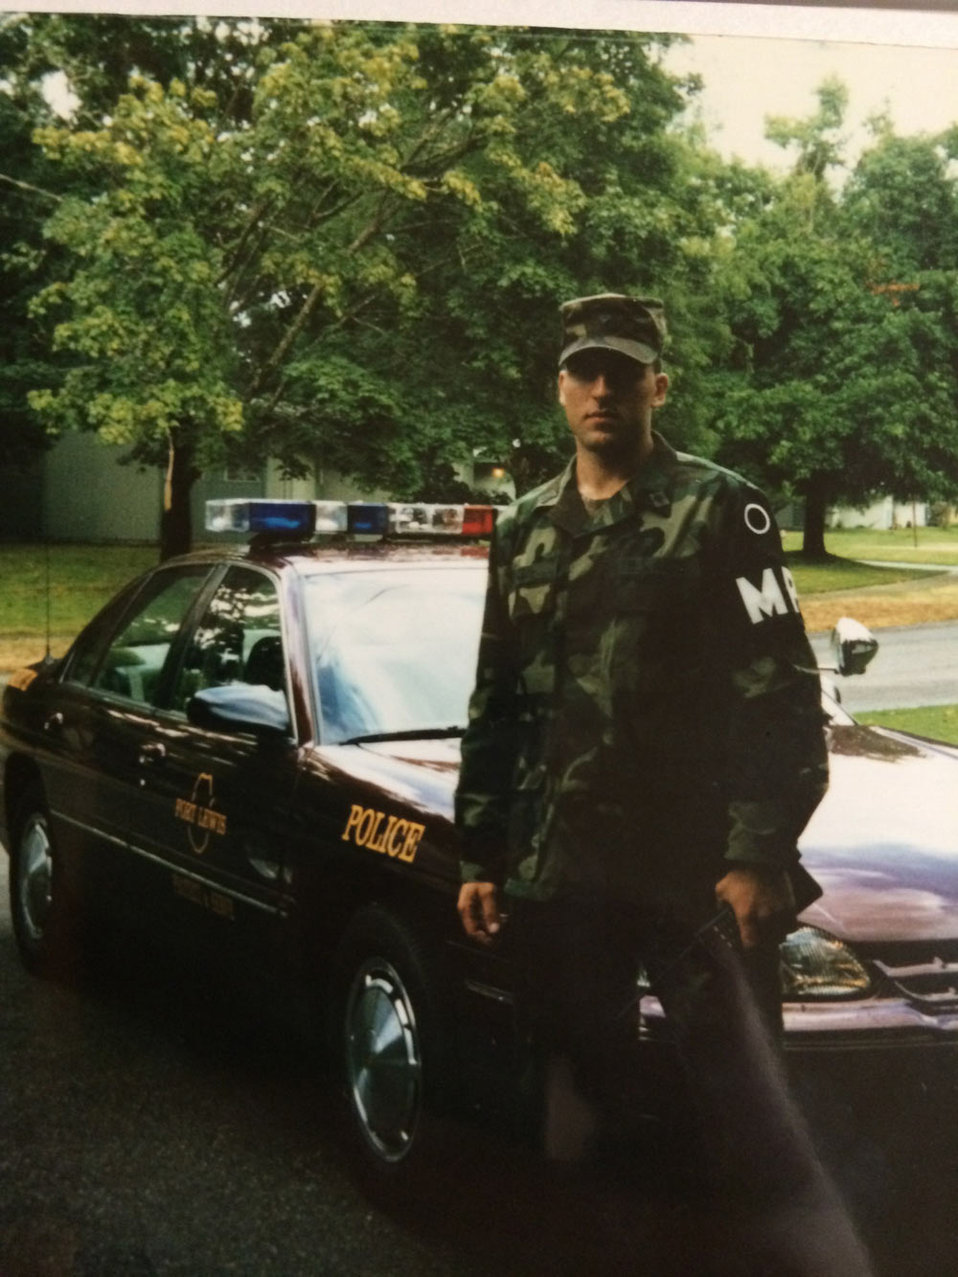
Ryan Cote-Alaska Region

Veteran Ryan C. Cote is a Special Agent in Alaska.